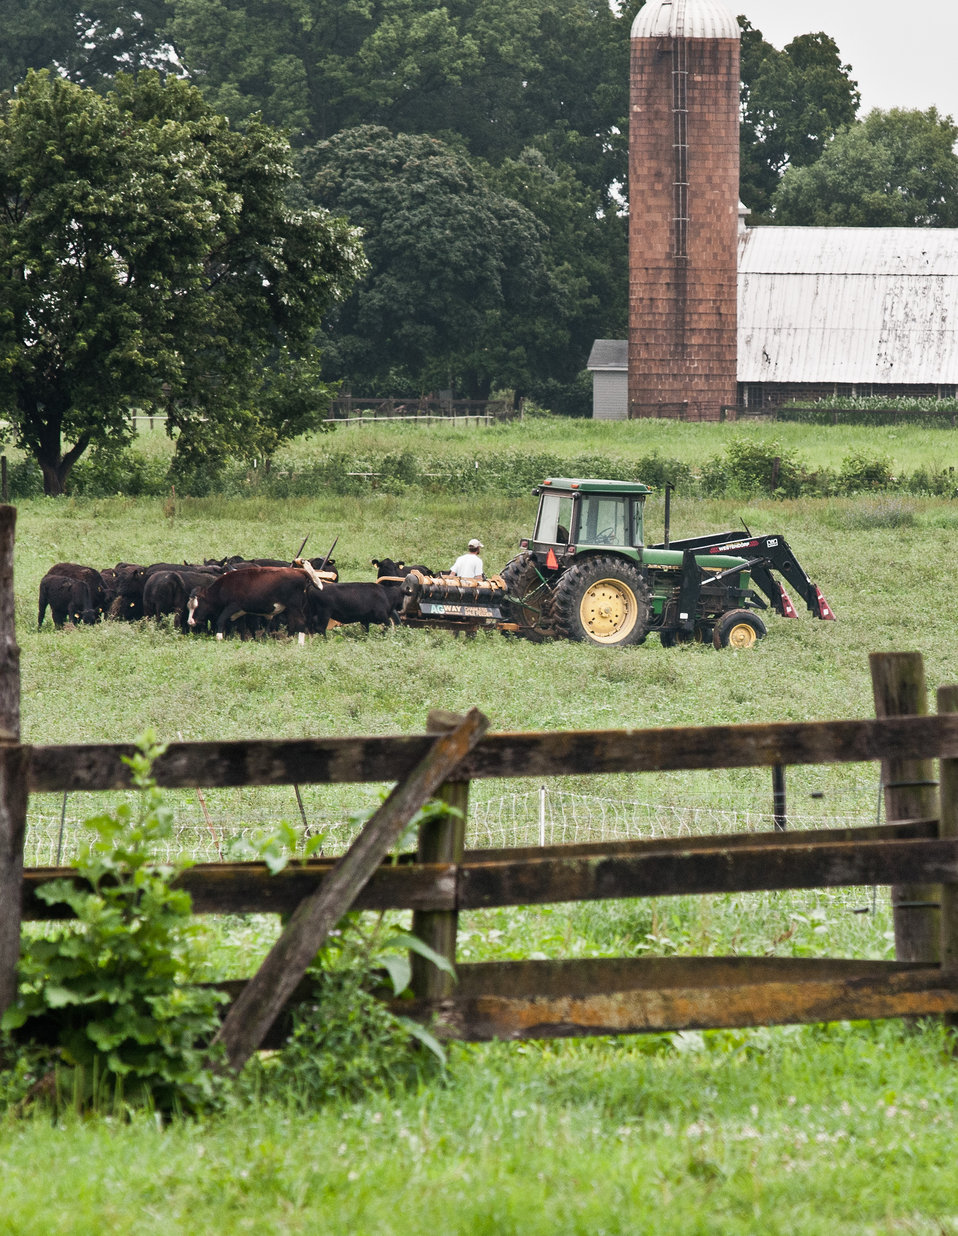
Farm Assistant George Kloph uses a tractor and silage bale spreader to lift and feed the herds of Black Angus cattle at Nick’s Organic Farm, owned by Nick Maravell, in Adamstown, MD on Friday, July 12, 2013. The white plastic wrapped bales of pasture grass and alfalfa have been fermenting for months to create sweet silage that stores well and can be used to feed cattle at varying amount all year long. The fermentation process sweetens the taste and increases the vitamin levels in it. The farm produces Black Angus beef, chicken, turkey, eggs, hay, soybeans, corn, alfalfa, orchard grass, rye; and other crops. The cattle are 100% grass-fed receiving certified organic pasture, certified organic hay (in winter), water and mineral salts mixed with sea kelp. The cattle are not fed hormones, antibiotics or animal products. Poultry feed from grain is ground from organic grain. The poultry also graze on organic pastures. The farm has conducted on-farm research with federal, state and non-profit agencies to refine organic practices. An organization such as the U.S. Department of Agriculture (USDA) Agricultural Research Service (ARS) center in Beltsville has been able to conduct research to improve organic crops and to breed and manage the cattle so that they have.